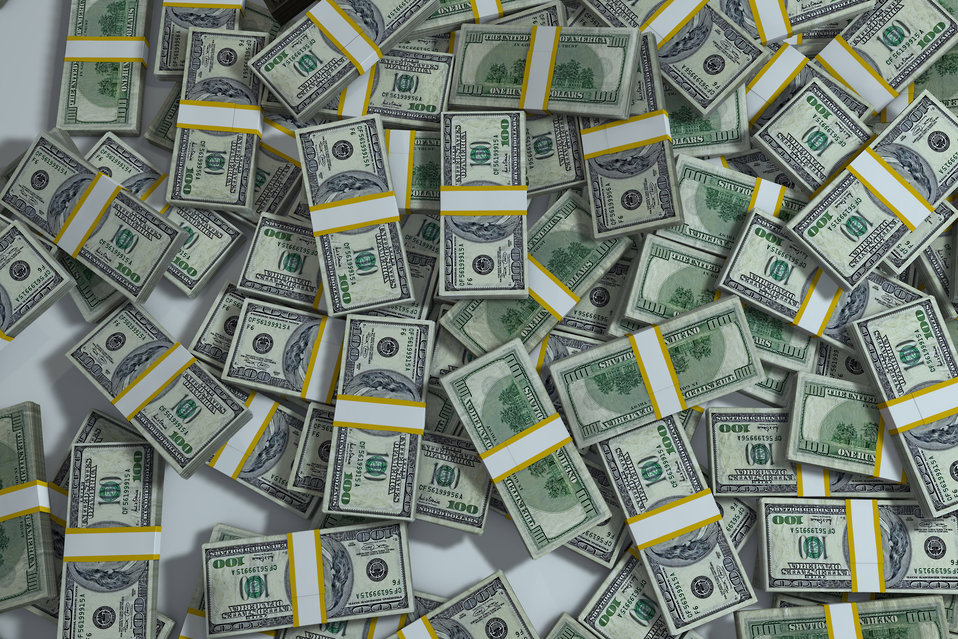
$ 100

Many dollars in packs.